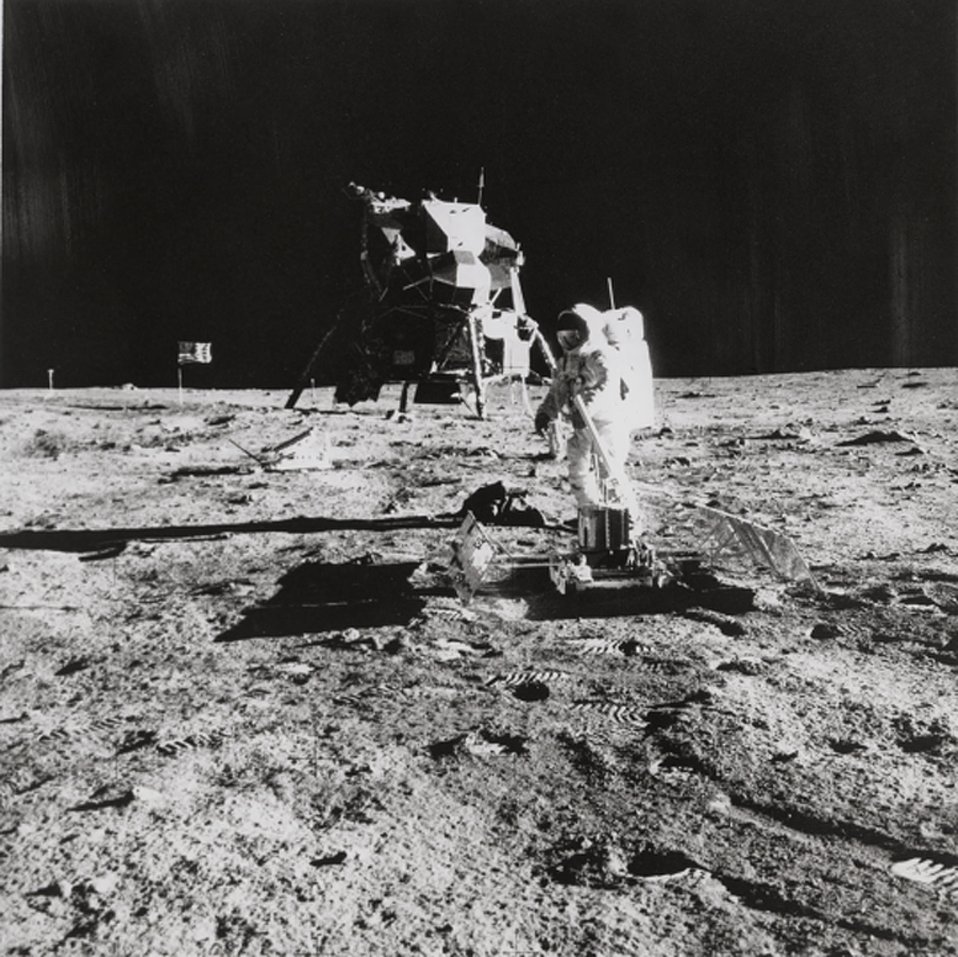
Photo shows seismic experiment at Tranquility Base two small plutonium 238 fueled heaters to keep the passive seismic experiment package warm during the long lunar nights.